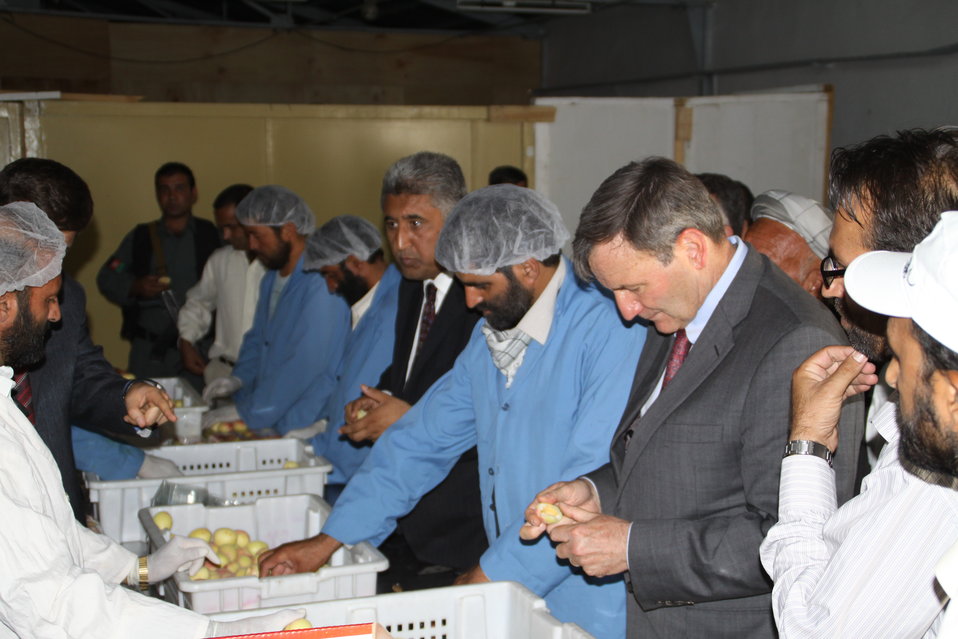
Badam Bagh Farm